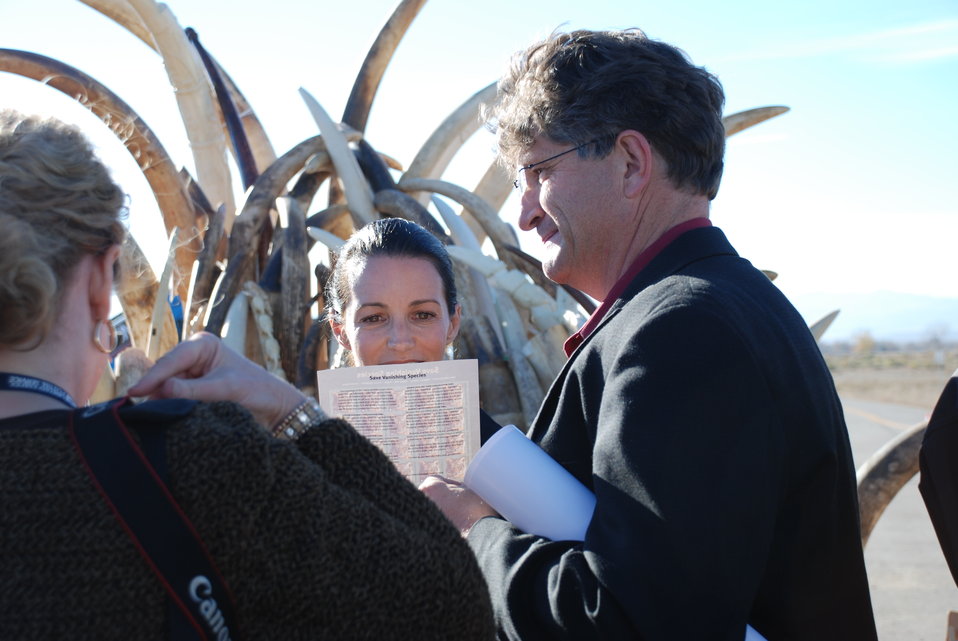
Ivory Crush 2013